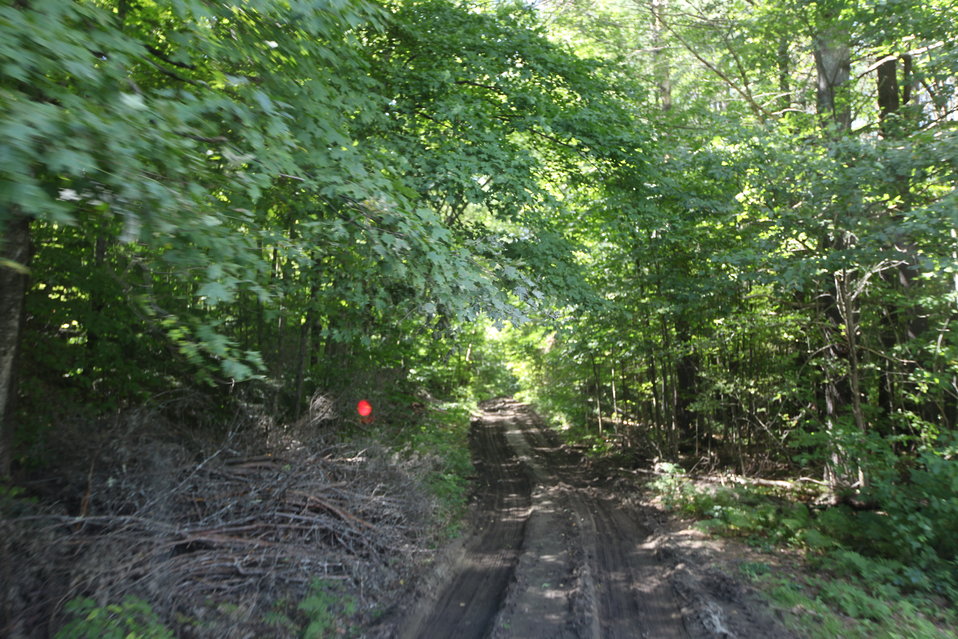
Storm damage relief at White River NFH

Clean-up of mud and silt deposited during the flood.